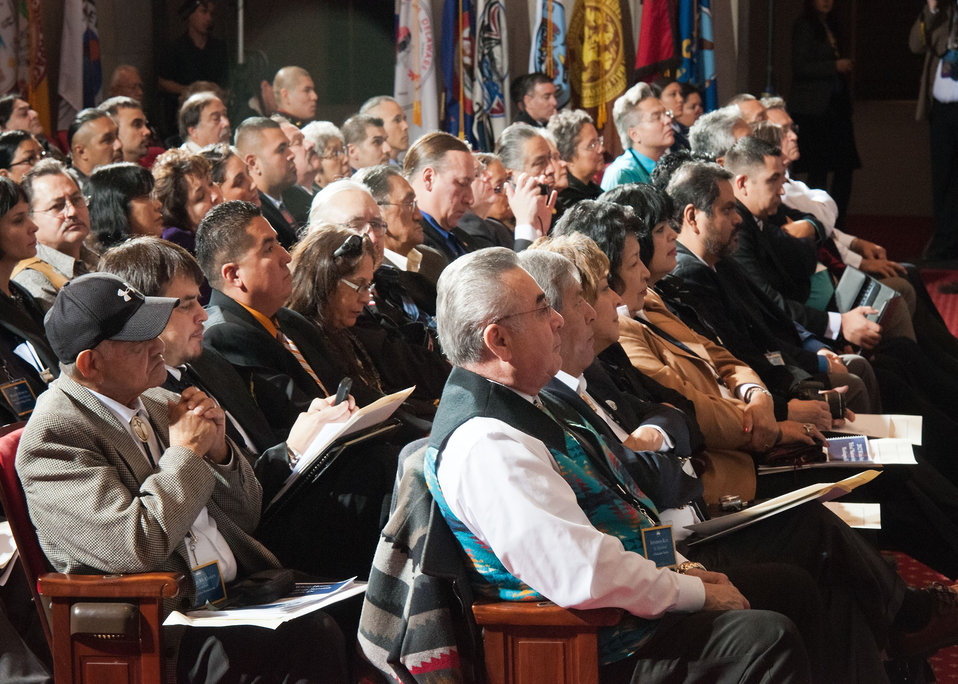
Members of Native American Tribal Nations attended the 2012 Fourth Annual White House Tribal Nations Conference at the U.S. Department of Interior in Washington D.C. on Wednesday, Dec. 5, 2012. Cabinet members Interior Secretary Ken Salazar, Agriculture Secretary Tom Vilsack, Education Secretary Arne Duncan, Treasury Deputy Secretary Neal Wolin, Commerce Acting Secretary Rebecca Blank, Health and Human Services Secretary Kathleen Sebelius discussed the gains and progress of the Obama Administration concerning Native American Tribal Nations.